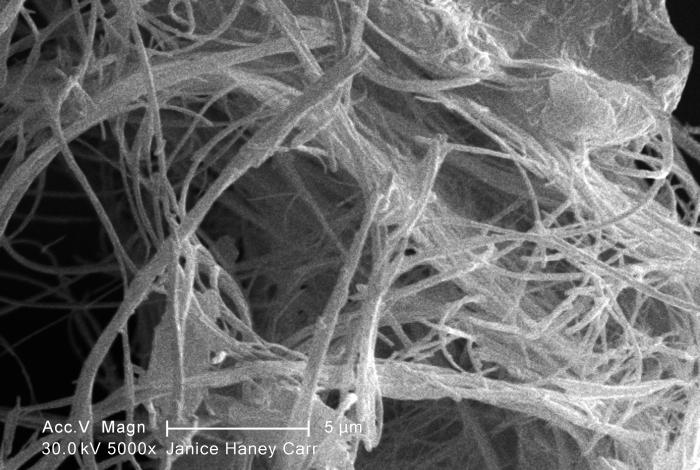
Under a high magnification of 5000X, this scanning electron micrograph (SEM) revealed some of the microcrystalline ultrastructure exhibited by a piece of raw chrysotile, or white asbestos, which had been excavated from the Lowell Asbestos Mine on Belvidere Mountain, Vermont.